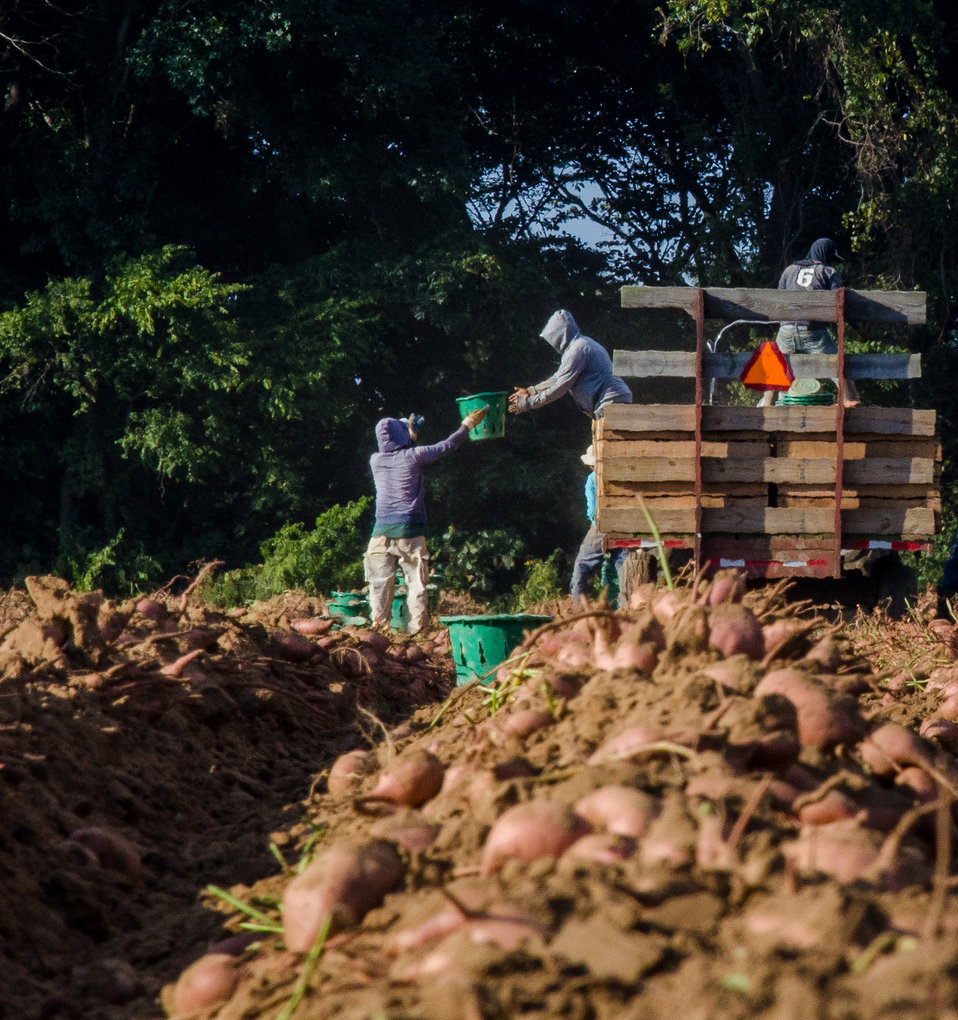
Harvested sweet potatoes are loaded onto a trailer at the Kirby Farms in Mechanicsville, VA on Friday, Sept. 20, 2013. The hand picked potatoes are taken to an onsite-heated warehouse to cure, a process that toughens the skin and brings the sweetness to a level normally expected in markets. Kirby Farms devotes 200 acres v to eggplant, spinach, beets, tomato, jalapeno peppers, melons and a variety of greens. Soybeans and small grain are grown on the remaining 300 acres. Using rotational crop practices allows Kirby Farms to double and triple crop yields. Wholesalers, who buy from this farm, sell the produce to major supermarkets in the Mid-Atlantic region, from North Carolina to Maryland. Restaurants in the local area prepare and serve the local bought produce to patrons in the Richmond, VA metropolitan area.